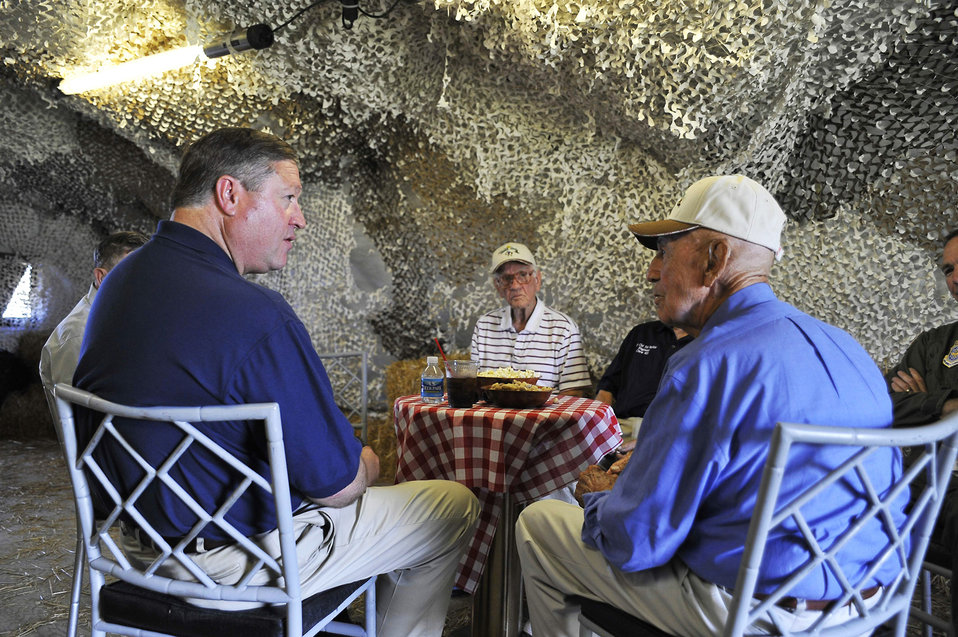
Secretary Donley visits mobility air forces competition

Secretary of the Air Force Michael B. Donley talks with retired Lt. Col. Dick Cole, a Doolittle Raider from World War II, during Air Mobility Rodeo 2009 July 22 at McChord Air Force Base, Wash., July 22, 2009.